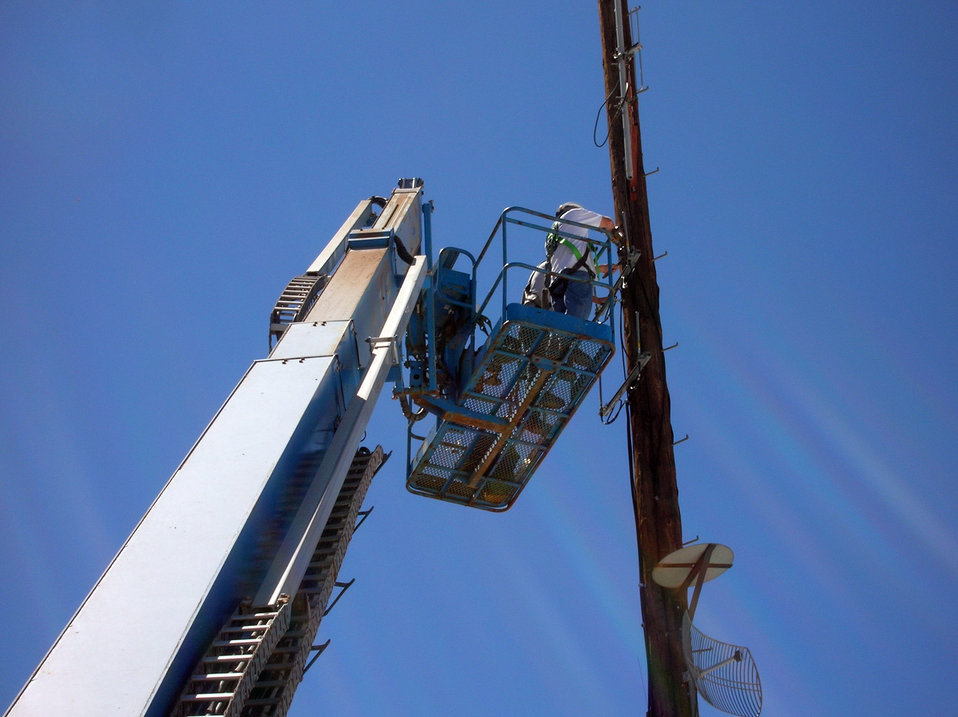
Holloman energy and water conservation projects

Contractors install the receiving antennae for an automated gas and electric meter reading system at Holloman Air Force Base, N.M. The Air Force is currently funding more than $5 million in energy conservation projects at Holloman AFB.